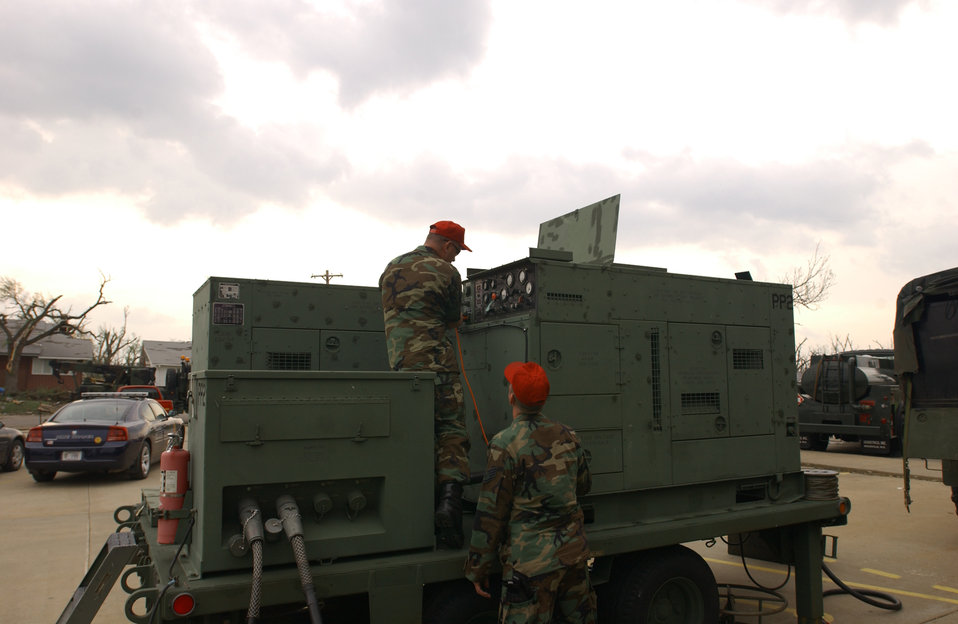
National Guard cleaning up devastated Kansas town

Two Kansas Air Guardsmen from the 184th Air Refueling Wing out of Wichita establish 120kw generator support May 5 for the town of Greensburg, Kan. Around 500 Army and Air National Guardmembers are in Greensburg removing debris, providing security, generating power, preparing food and performing other disaster relief functions.